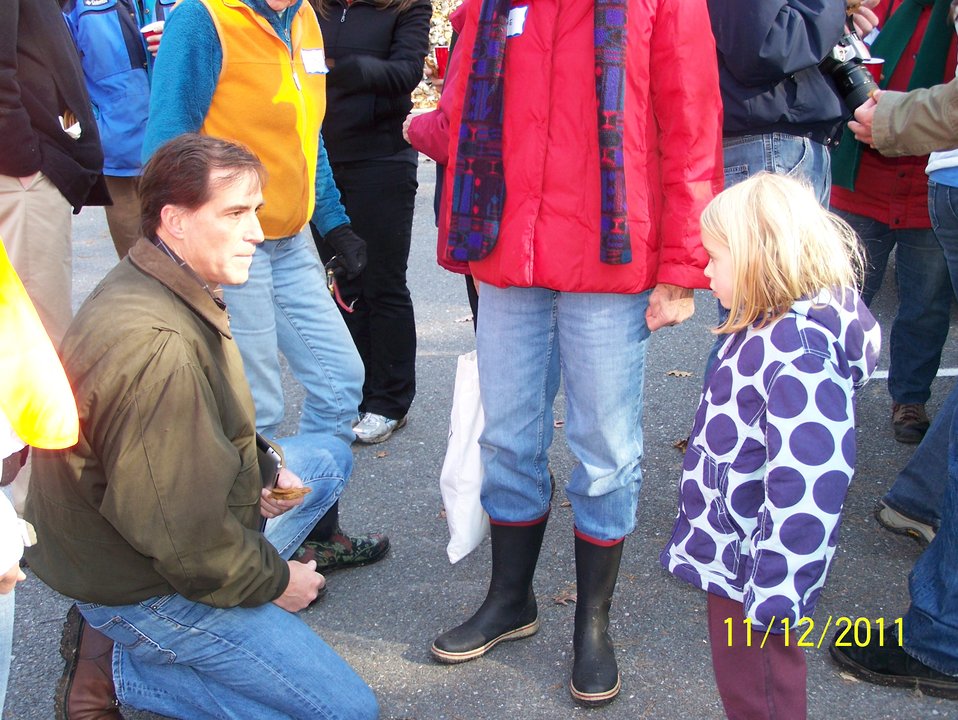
Dan Ashe speaks to a young Oxbow refuge visitor